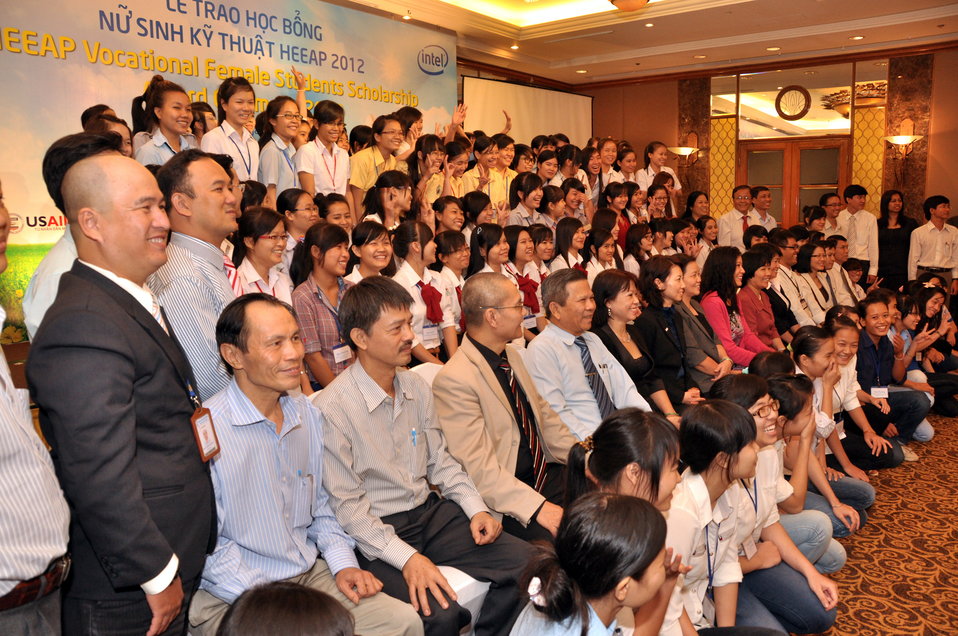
Female Vocational Student Scholarship Ceremony

Ho Chi Minh City, January 11, 2013